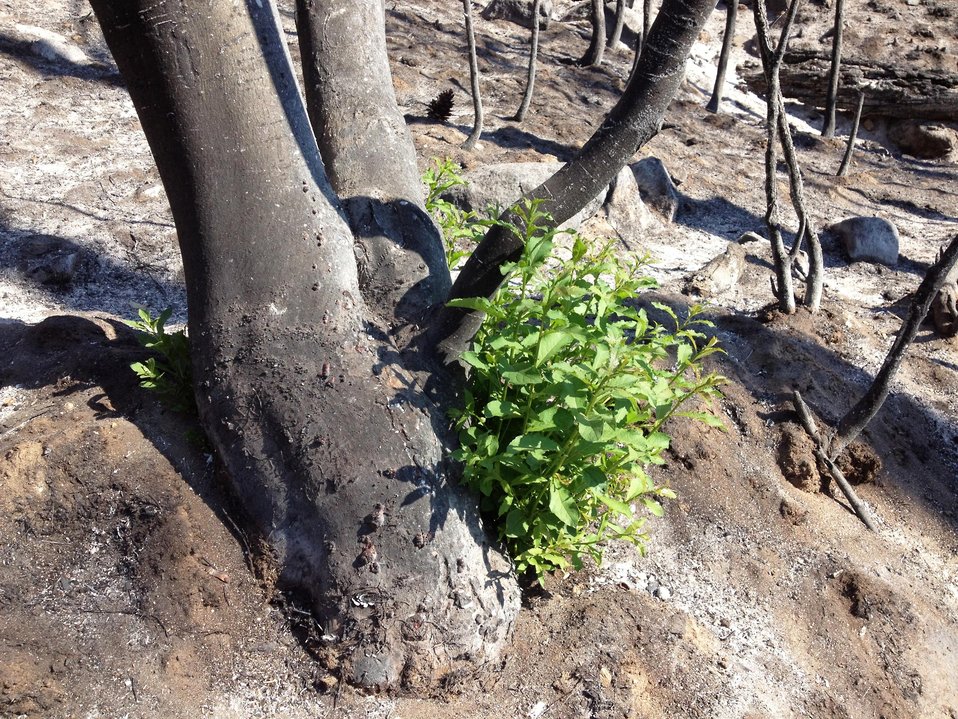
Three weeks after the Rim Fire, new vegetation starts growing. Burned Area Emergency Response (BAER) is a rapid assessment of burned watersheds by a BAER team to identify imminent post-wildfire threats to human life and safety property and critical natural or cultural resources on National Forest System lands and take immediate actions to implement emergency stabilization measures before the first major storms. Fires result in loss of vegetation exposure of soil to erosion and increased water runoff that may lead to flooding increased sediment debris flows and damage to critical natural and cultural resources. BAER team members implement seeding and mulching installation to prevent erosion, erect temporary water run-off control structures that will protect recovering areas, and installation of warning signs, replace safety related facilities, remove safety hazards, prevent permanent loss of habitat for threatened and endangered species, and prevent the spread of noxious weeds and protect critical cultural resources. The Rim Fire in the Stanislaus National Forest near in California began on Aug. 17, 2013 and is under investigation. The fire has consumed approximately 256,169 acres and is 84% contained.